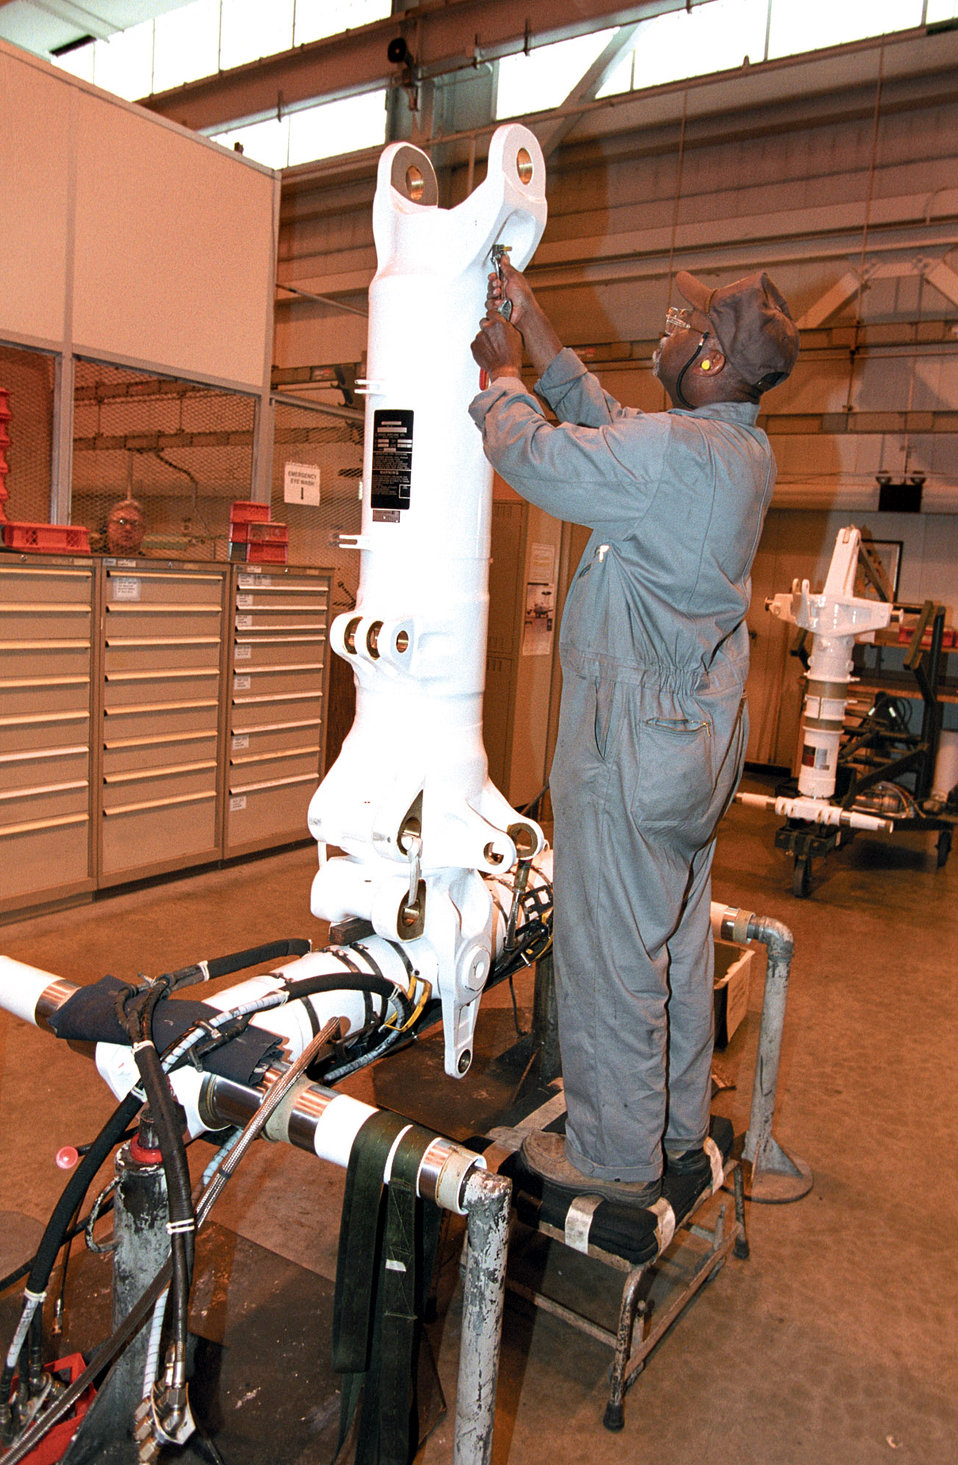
Corrosion control

TINKER AIR FORCE BASE, Okla. -- Wallace Edwards, a work leader, loosens a valve so he can add hydraulic fluid to an E-3 Sentry's main landing gear before checking for leaks.